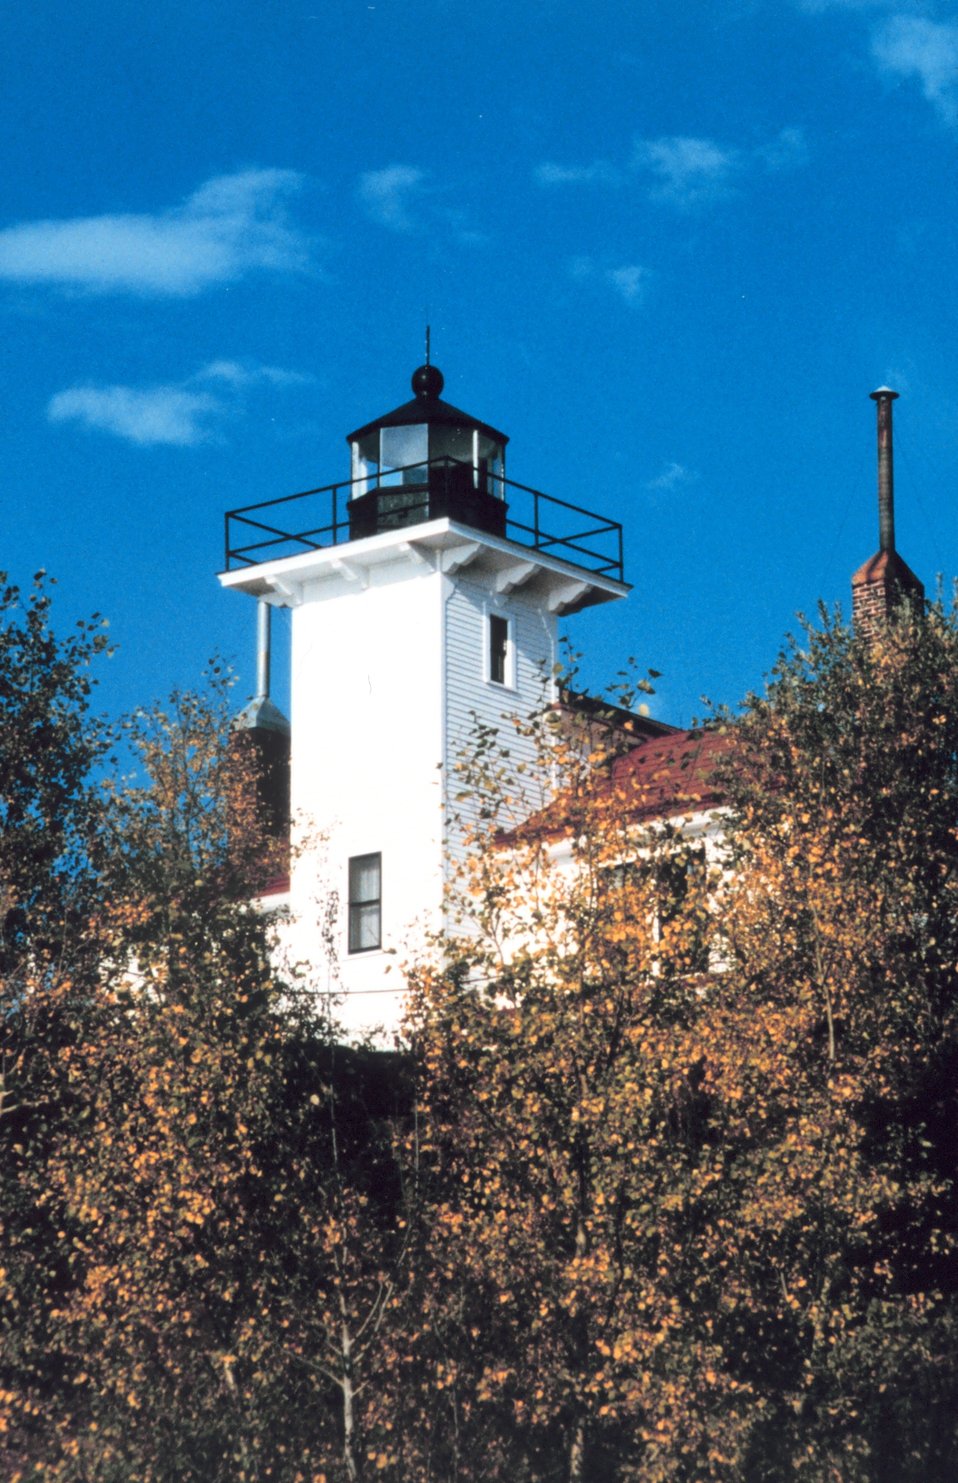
Raspberry Island Lighthouse